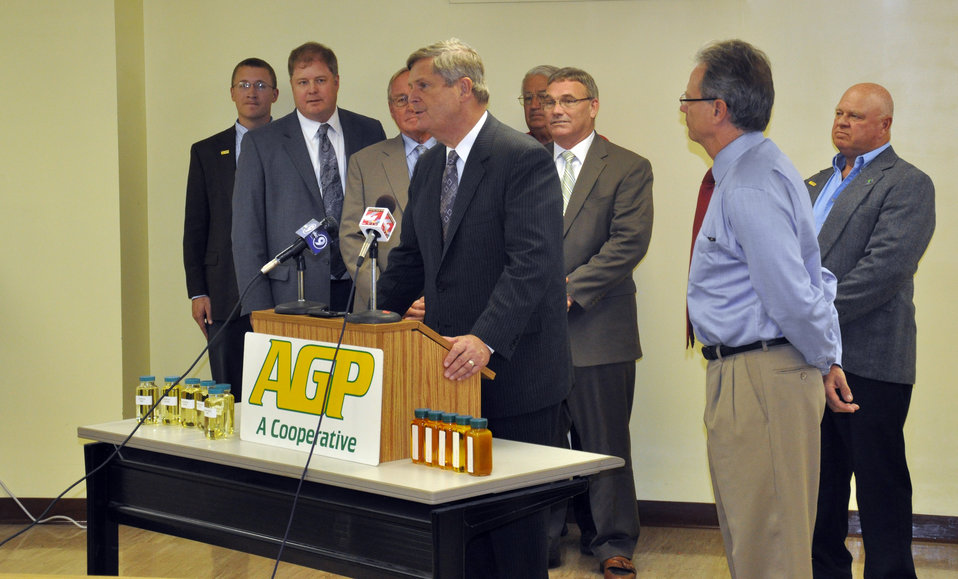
Agriculture Secretary Tom Vilsack discusses the Environmental Protection Agency's (EPA) at AGP’s biodiesel plant in Sergeant Bluff, IA on Sept. 14, 2012. The EPA announcement set the 2013 volume of biodiesel products requirement for diesel fuel in markets at 1.28 billion gallons under the Energy Independence and Security Act of 2007 (EISA).